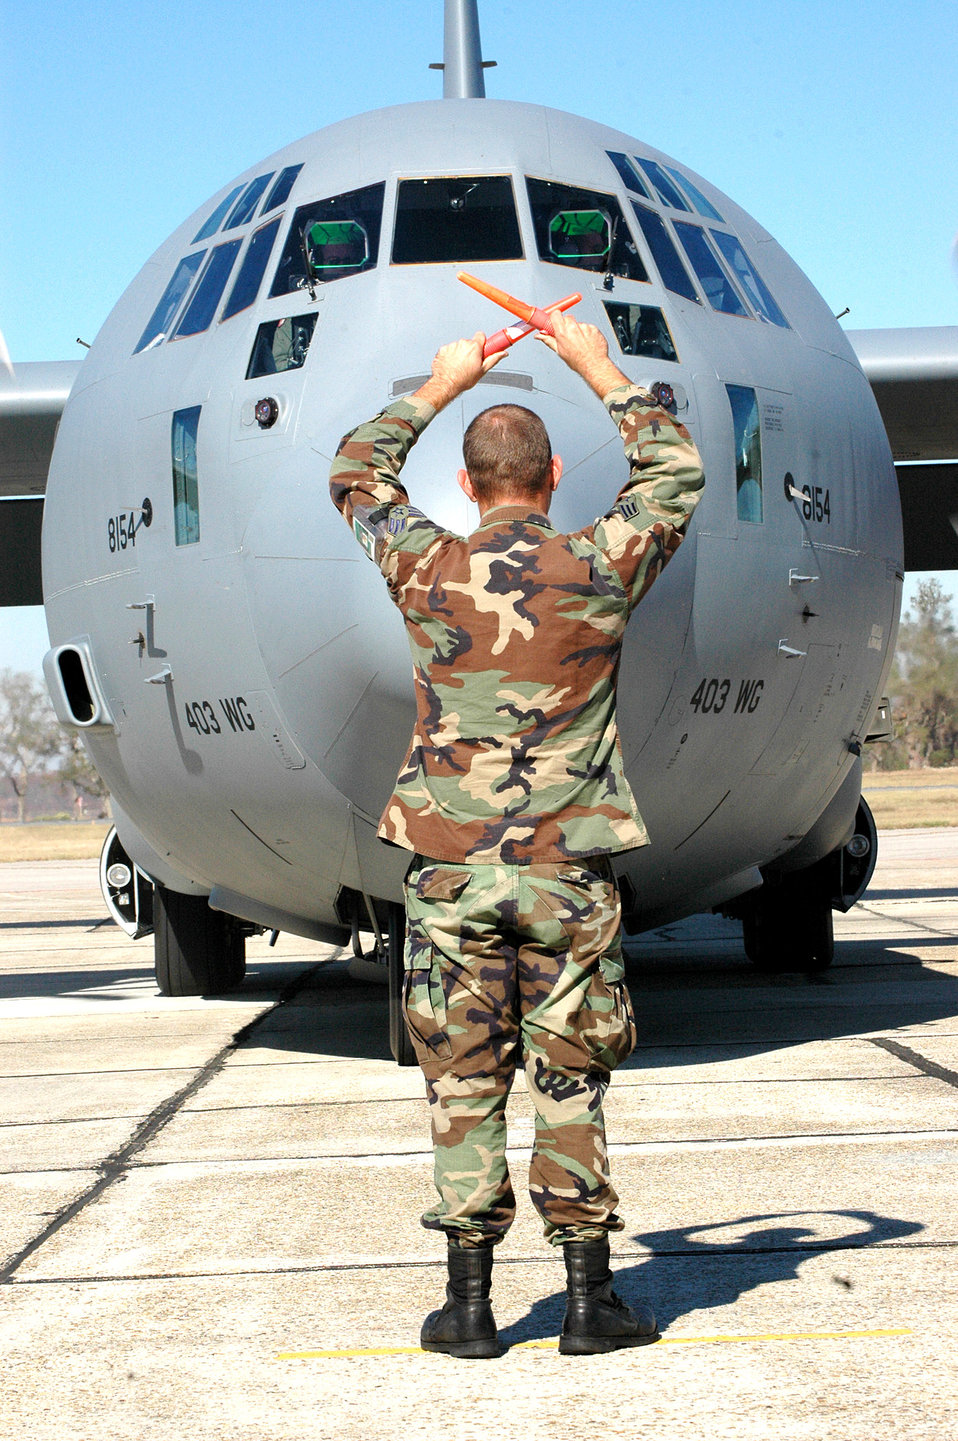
Back home

KEESLER AIR FORCE BASE, Miss. (AFPN) -- Senior Airman Mark Fowler guides a C-130J Hercules into its parking spot here. The 403rd Wing mission, which includes the 53rd Weather Reconnaissance Squadron's